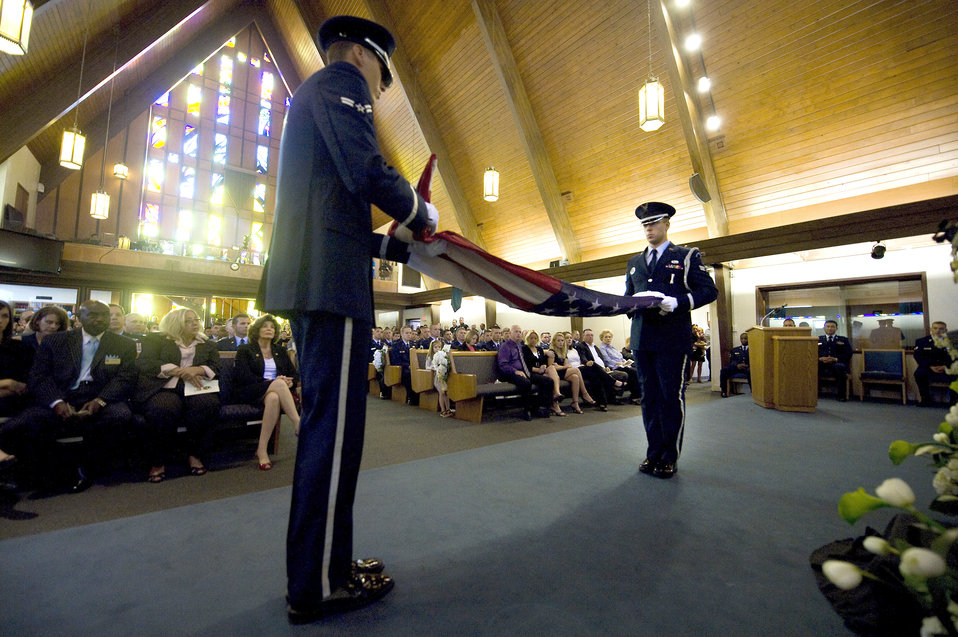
SrA Buras memorial service

Nellis Air Force Base Honor Guard members perform the flag-folding ceremony inside the base chapel during a memorial service for Senior Airman Michael Buras Oct. 15, 2010, at Nellis AFB, Nev. Airman Buras was an explosive ordnance disposal journeyman assigned to the 99th Civil Engineer Squadron when he was killed in action while responding to a roadside bomb Sept. 21, 2010, in Afghanistan.